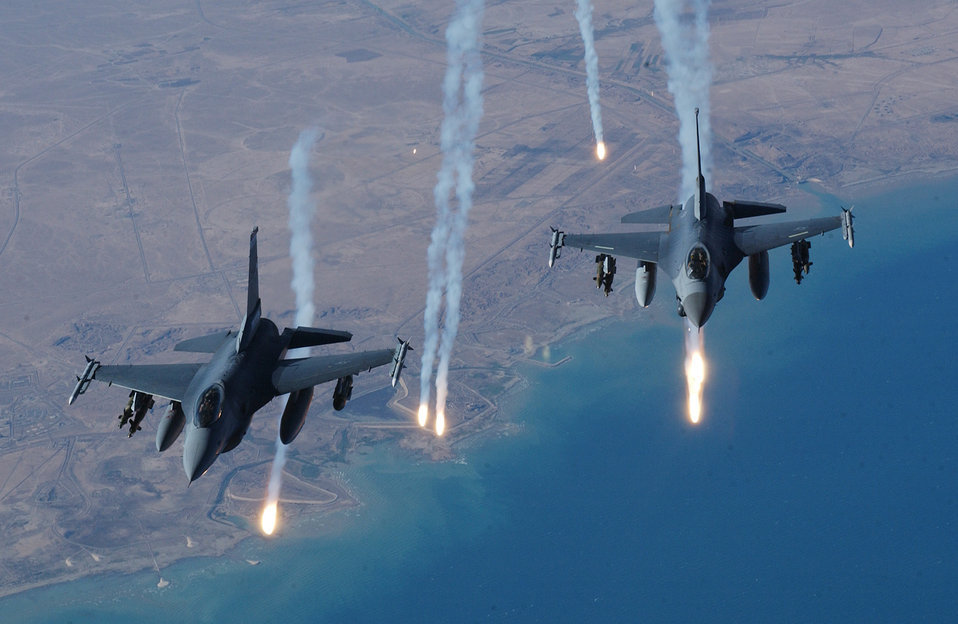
Air power!

OVER IRAQ -- A pair of F-16 Fighting Falcons launch flares during a mission Aug. 18. The aircraft are assigned to the 332nd Air Expeditionary Wing at Balad Air Base, Iraq, and deployed from the New Mexico Air National Guard.